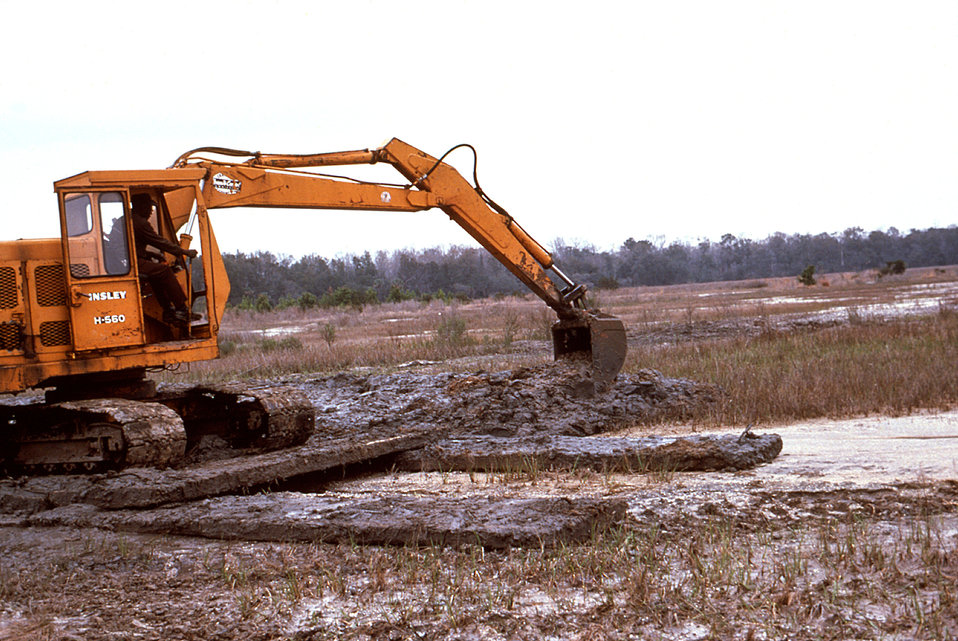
Here a hydraulic powered bucket shovel was in the process of removing debris from a drainage system, and smoothing out a berm created in the ditch digging process, in order to allow for the free flow of water that was collecting in the region.